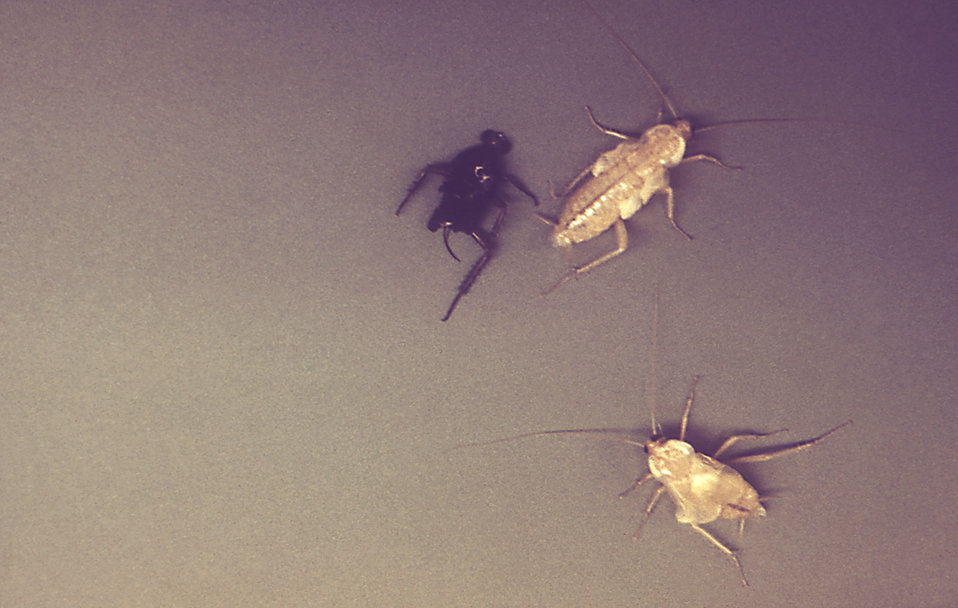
These are American cockroaches, Periplaneta americana.